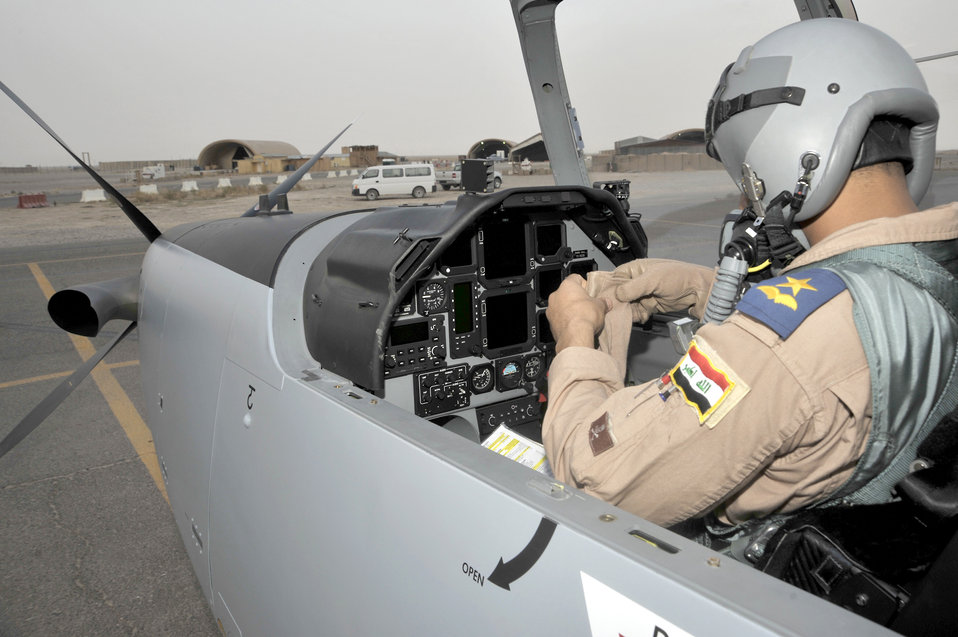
Iraqi air force pilots train with T-6A

An Iraqi air force student pilot prepares for a training mission Sept. 26, 2010, at Tikrit Air Base, Iraq. U.S. Air Force instructor pilots are training and advising the first group of Iraqi air force instructor pilots on the T-6A Texan II.